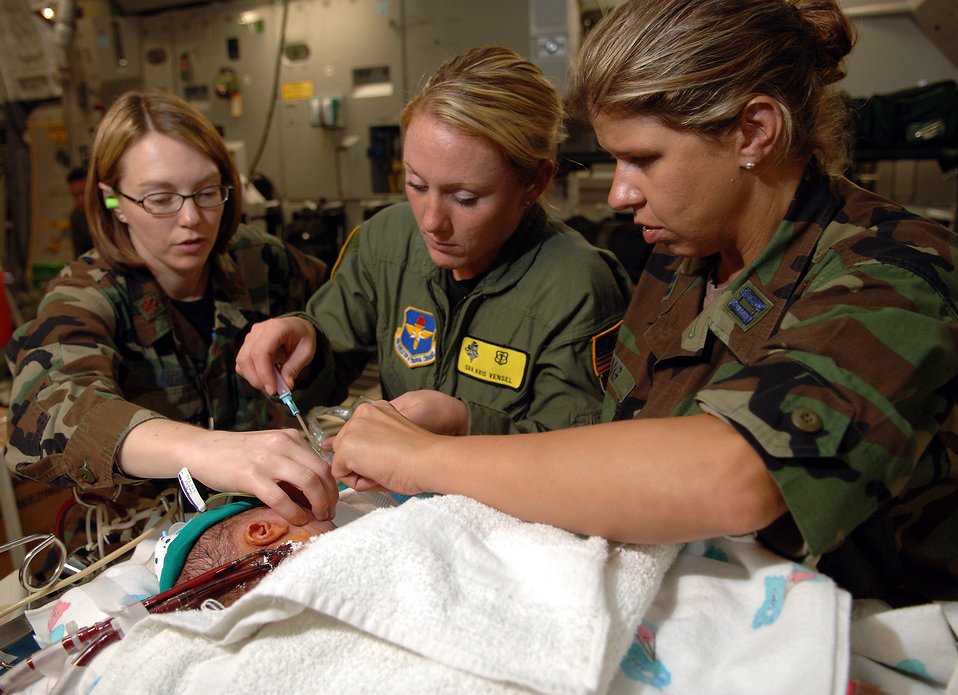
ECMO medical team transports newborn

From left, Maj. Jeanette Gonzalez, Senior Airman Kris Vensel and Capt. Karen Long administer medications to 4-day-old Stuart Parker aboard a C-17 Globemaster III. An Extracorporeal Membrane Oxygenation team from the Wilford Hall Medical Center traveled to Puerto Rico, to transport Stuart to San Antonio.